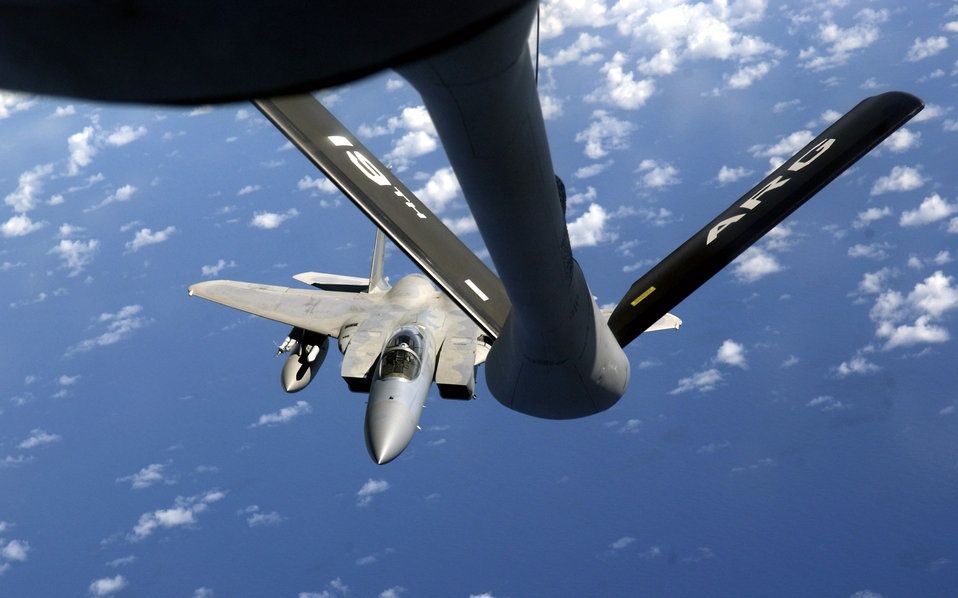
Valiant Shield gas station

An F-15 Eagle flies toward the boom of a KC-135 Stratotanker during Exercise Valiant Shield Aug. 9 at Andersen Air Force Base, Guam. The F-15 is from the 44th Fighter Squadron at Kadena Air Base, Japan, and the KC-135 is from the New Hampshire Air National Guard. During the exercise, Air Force aircraft and Airmen from stateside bases and Kadena AB will comprise part of an expeditionary air wing based at Andersen AFB. Andersen AFB will also be the bed-down location for approximately 64 Air Force and 29 Navy aircraft, plus transient aircraft, during Valiant Shield.